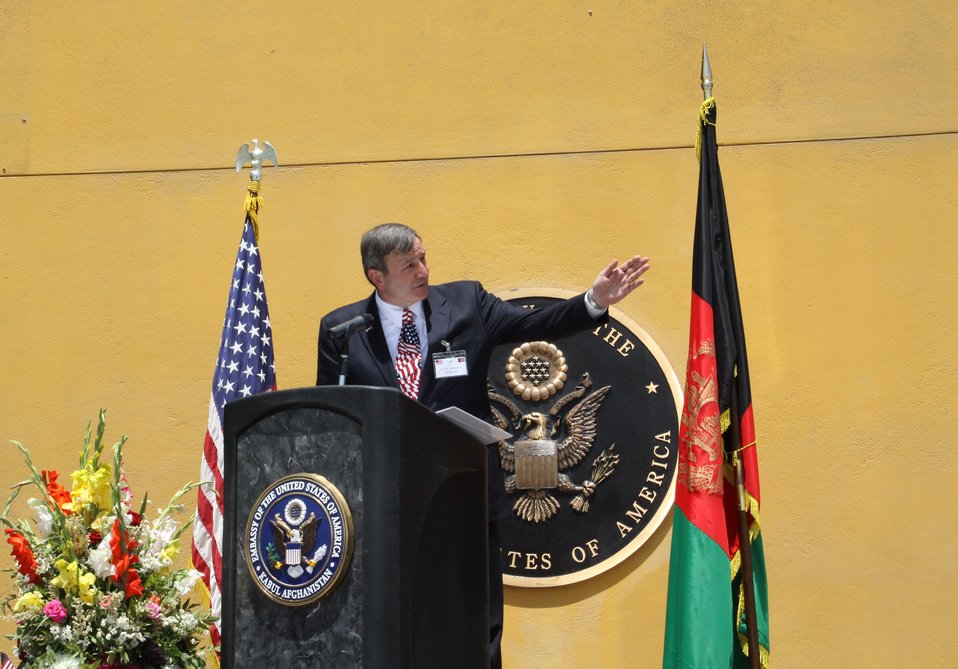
Kabul Official July 4th Celebration